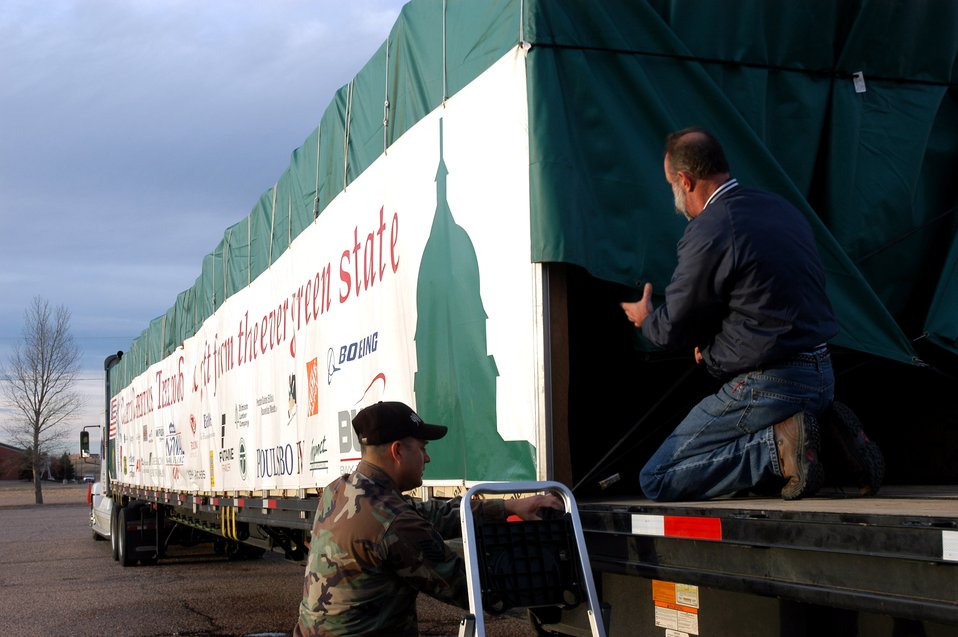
Capitol Christmas Tree visits Wyoming base

Tech. Sgt. Roger Salinas assists driver Gordy Grove in tying down the flap on the back of the truck Nov. 21 after Airmen from 90th Civil Engineer Squadron fire department watered the 2006 Capitol Christmas Tree being transported to Washington D.C. The tree stopped at F.E. Warren Air Force Base, Wyo., on its way to the nation's capital. Sergeant Salinas is assigned to the 90th CES.